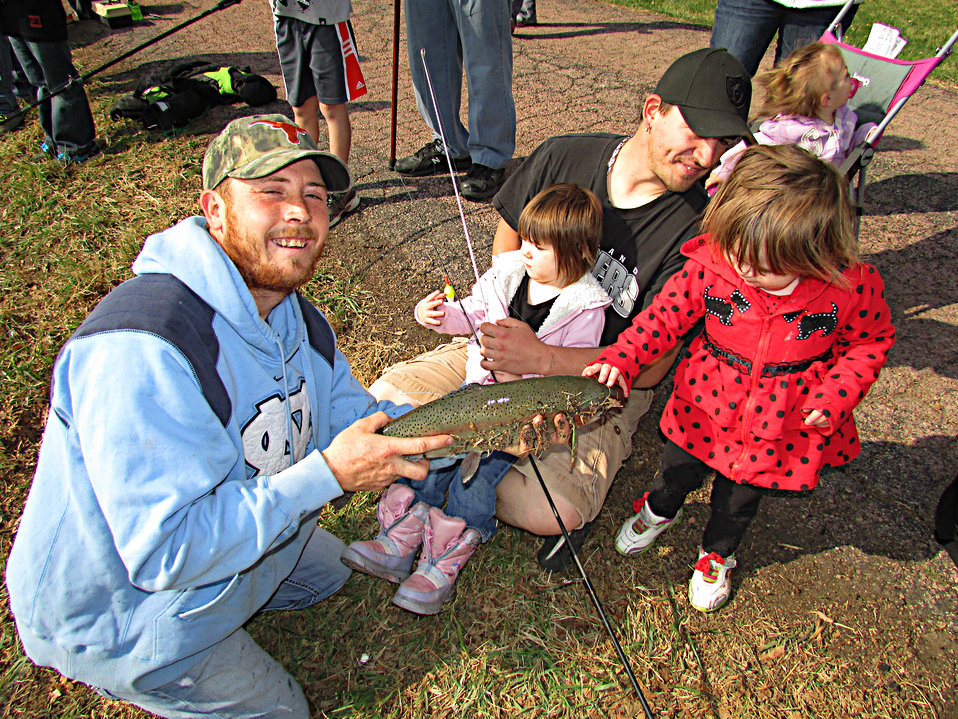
Family Affair

Some fisherwomen weren't too sure about this trout thing.